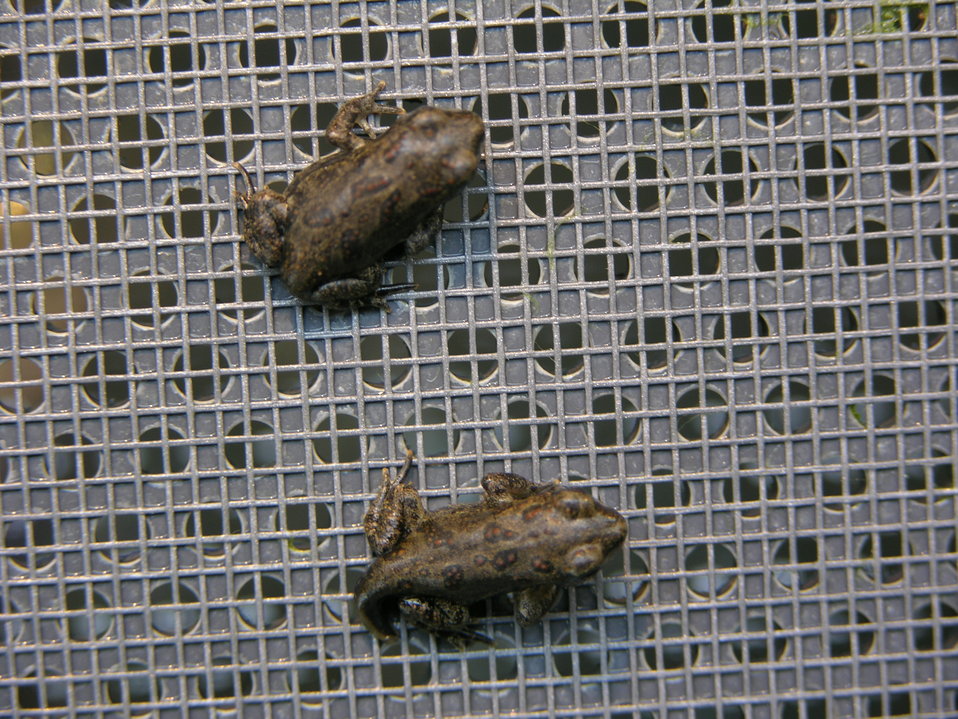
Wyoming Toadlets